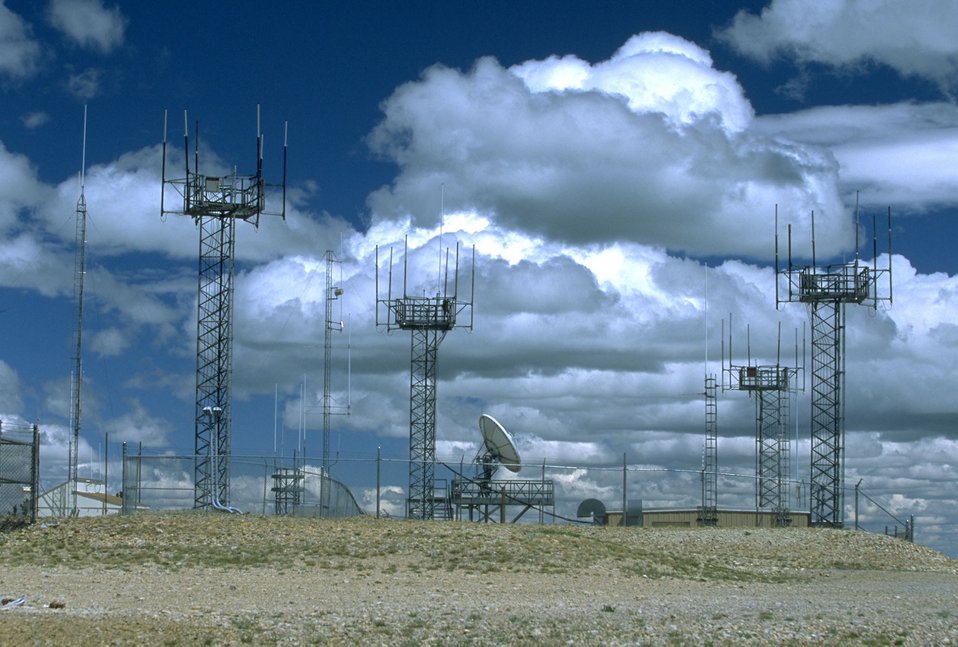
Ominous clouds over the Judith Peak communications site